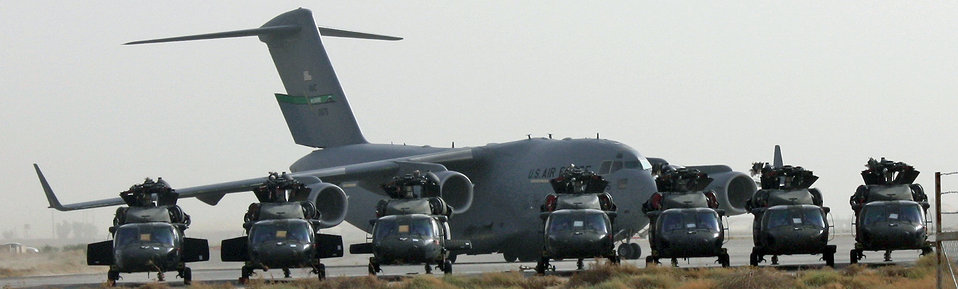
Balad Airmen move helicopters

A C-17 Globemaster III pulls onto the parking ramp behind Army UH-60 Blackhawk helicopters waiting for transport July 12, 2010, at Joint Base Balad, Iraq. As the drawdown and redeployment of assets continues in Iraq, helicopters from bases in Northern Iraq have made their way to JB Balad to be inspected, prepped and shipped to new operating locations.